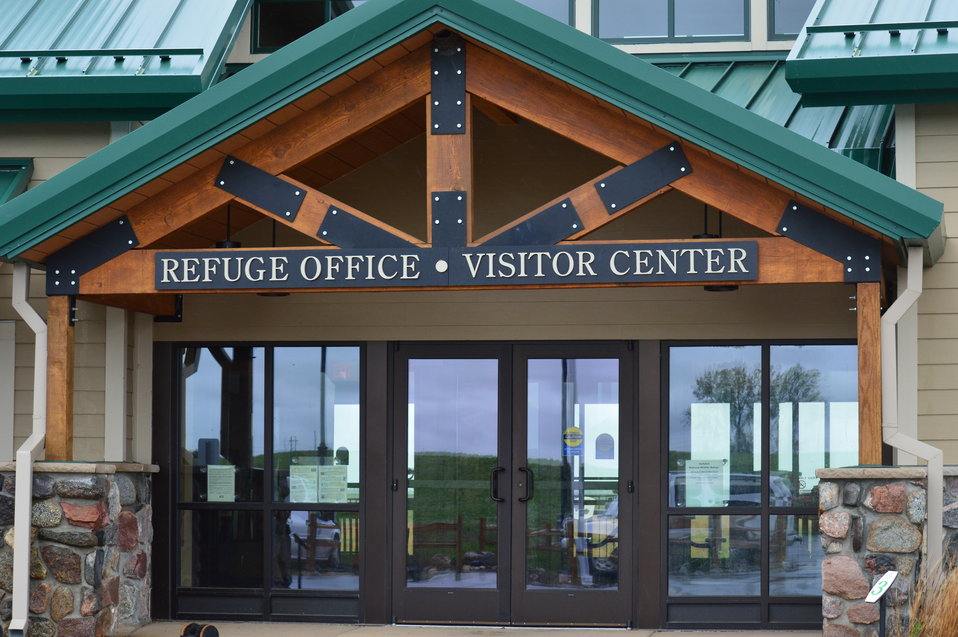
Refuge Office and Visitor Center entrance